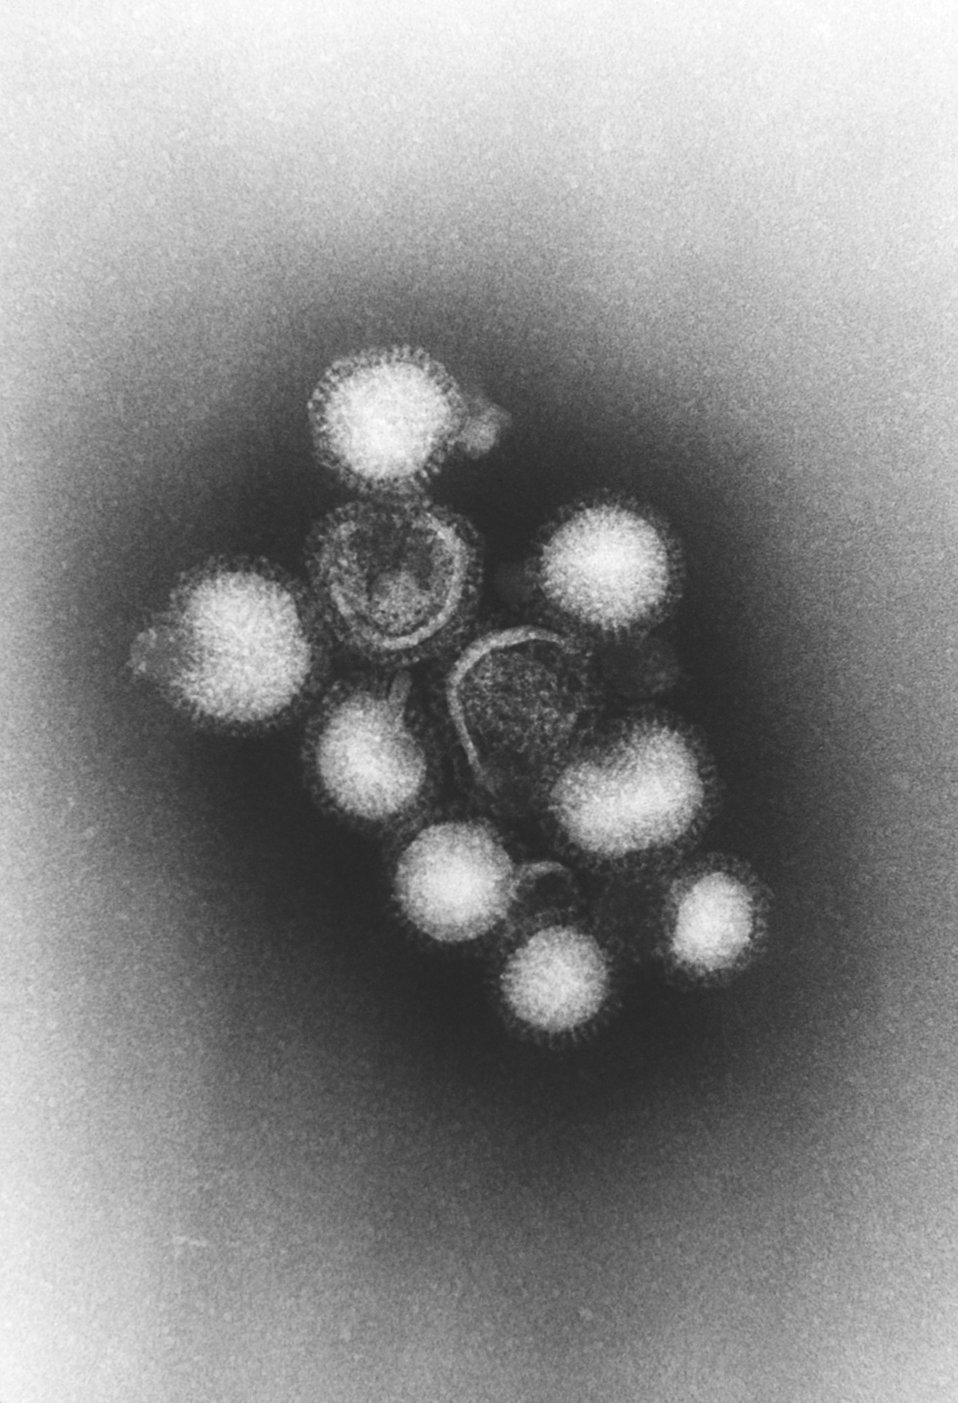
This negatively-stained transmission electron micrograph (TEM) depicted a small grouping of a number of influenza A virions, which also revealed at this very high magnification, the neuraminidase and hemagglutinin 'spikes' protruding from the virions' proteinaceous capsid coats. At its core, the genome consists of eight single-stranded segments of a negative-sense RNA ((-) ssRNA). Influenza A virions can be observed as being both spherical and filamentous in nature. Each strand is enclosed in, or 'encapsidated' inside the viral nucleoprotein, thereby, forming what is known as the ribonucleoprotein (RNP) particle.